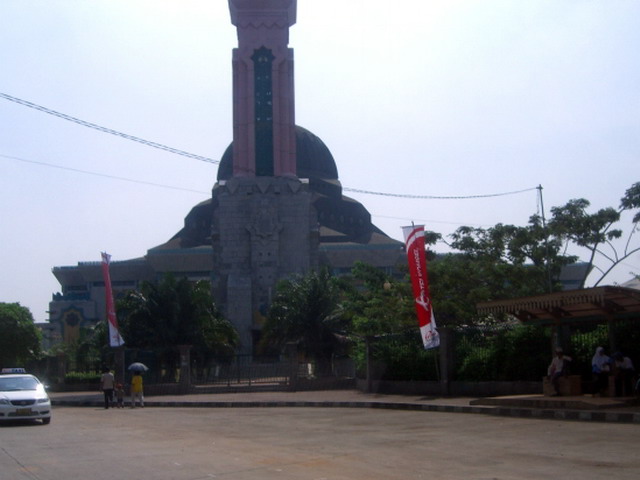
Bahasa Indonesia: saya sebagai pembuat gambar ini menyatakan gambar ini mempunyai lisensi Domain Umum. Bkusmono 08:56, 5 Juli 2007 (UTC)